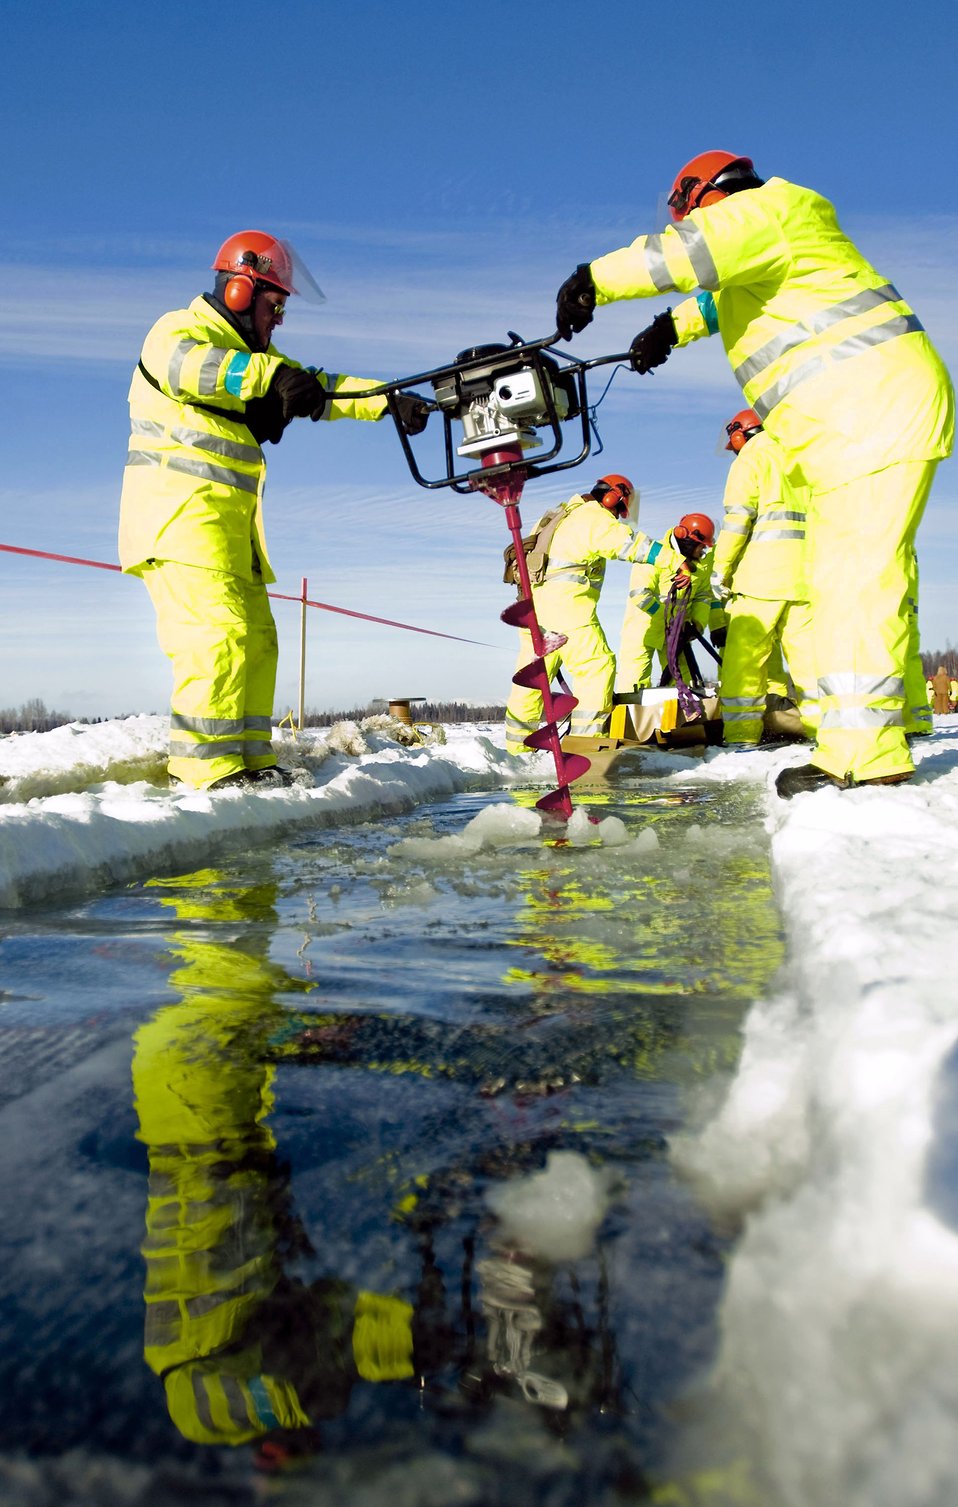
No slipping!

Master Sgt. James Fraser and Tech. Sgt. Eddie Campbell drill a hole in the ice with an auger Feb. 24, 2009, at Six Mile Lake near Elmendorf Air Force Base, Alaska. The Airmen from the 611th Civil Engineer Squadron were practicing oil spill recovery tactics.